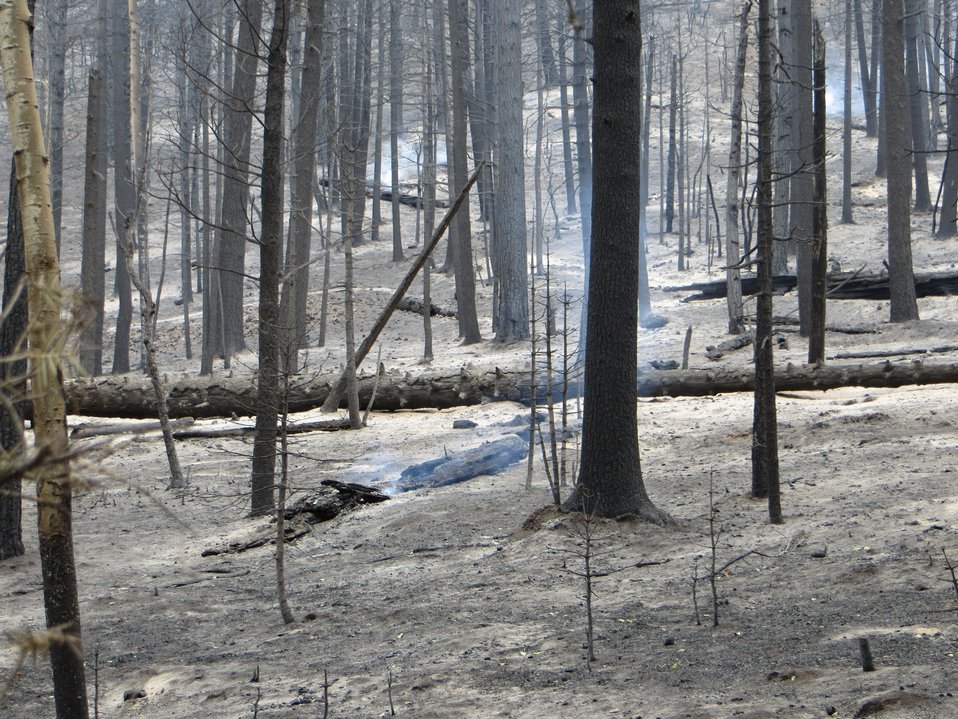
A burned out section of forest at the Thompson Ridge Fire in the Sante Fe National Forest approximately 10 miles north of Jemez, NM began on May 31, 2013 consumed over 29, 903 acres.